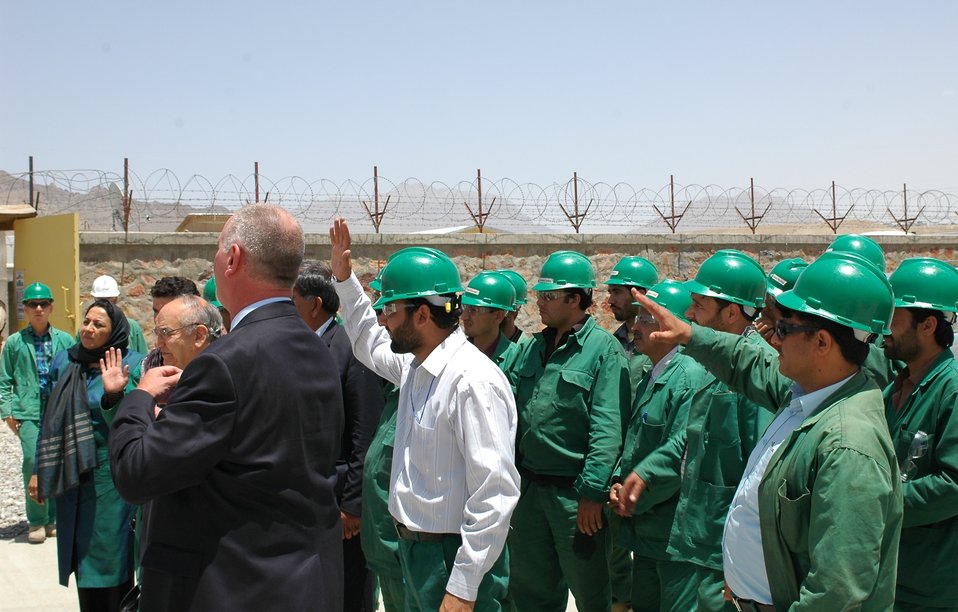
105 MW Tarakhil Power Plant Handover